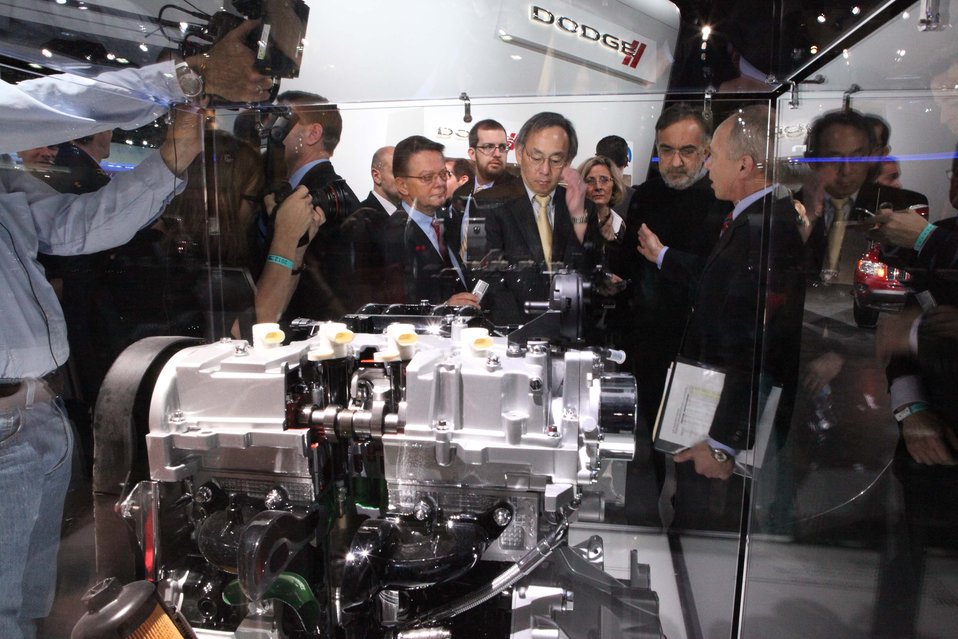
Energy Secretary Steven Chu looks over the four cylinder, 2.4-liter, 184 horsepower engine block of the Dodge Dart .